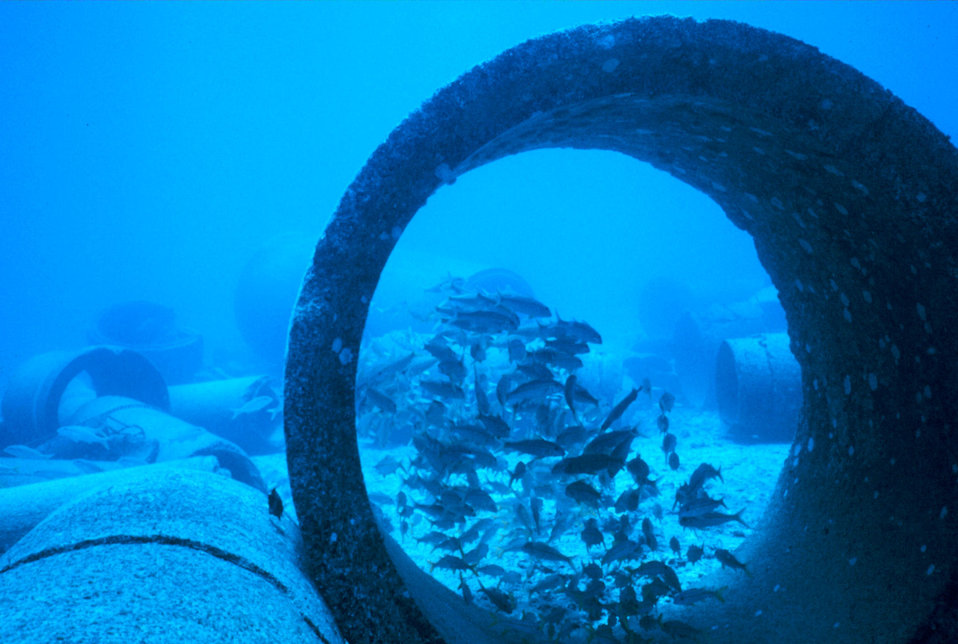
School of Mulloidichthys samoensis (Weke) in large concrete pipe. This was soon after the placement of the artificial reef.